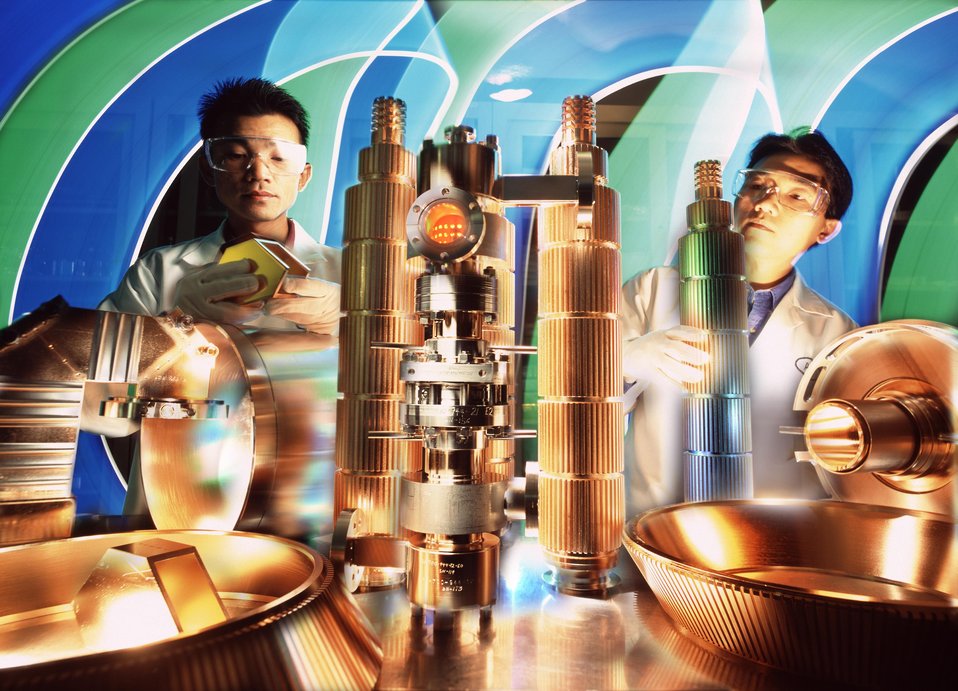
STANFORD LINEAR ACCELERATOR TECHNICIANS WORK ON COPPER ELEMENTS FOR ACCELERATORS.

SLAC IS ONE OF WORLD'S LEADING RESEARCH LABORATORIES. LOCATED AT STANFORD UNIVERSITY, MENLO PARK, CALIFORNIA, ITS MISSION IS TO DESIGN, CONSTRUCT AND OPERATE STATE OF THE ART ELECTRON ACCELERATORS AND RELATED EXPERIMENTAL FACILITIES FOR USE IN HIGH ENERGY PHYSICS AND SYNCHROTRON RADIATION RESEARCH.